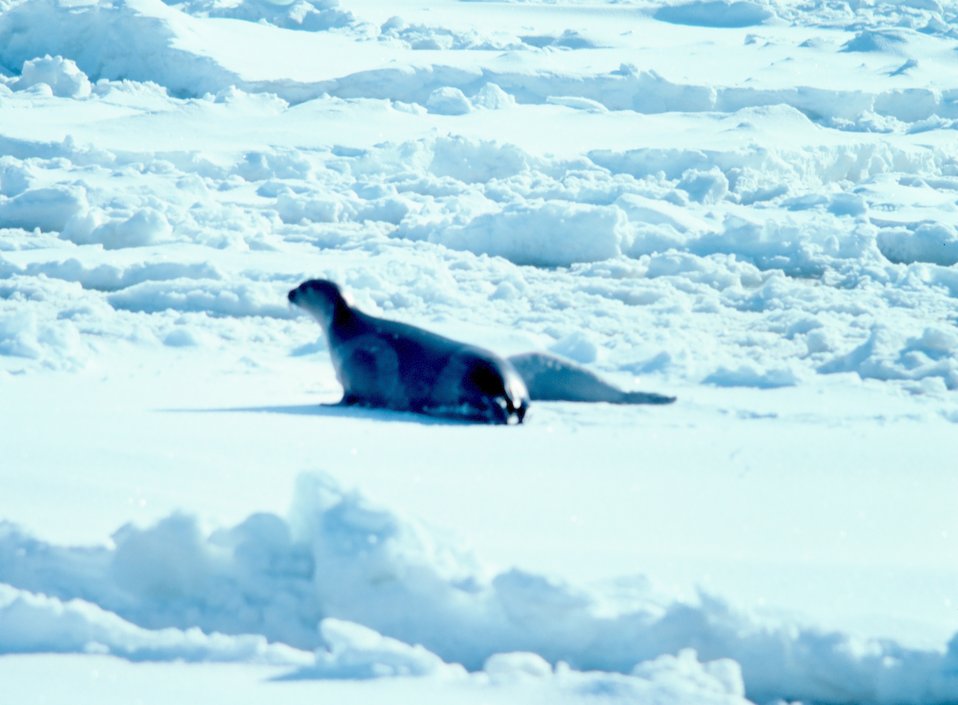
Ribbon seal - Phoca fasciata.